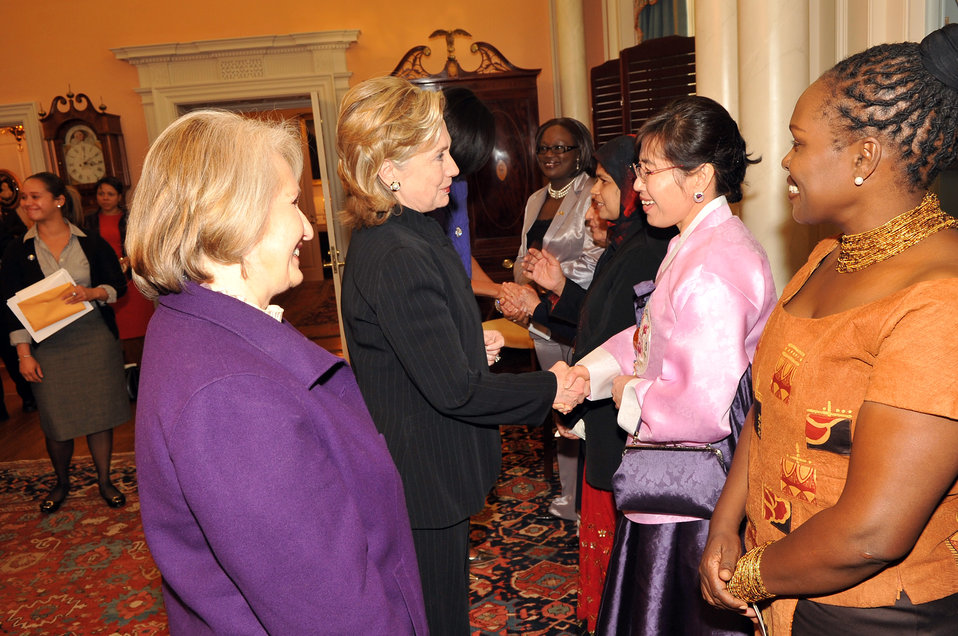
Secretary Clinton Shakes Hands With Honoree Dr. Lee Ae-ran

U.S. Secretary of State Hillary Rodham Clinton shakes hands with Honoree Dr. Lee Ae-ran of the Republic of Korea at the 2010 International Women of Courage at the U.S. Department of State, Washington, D.C. March 10, 2010.